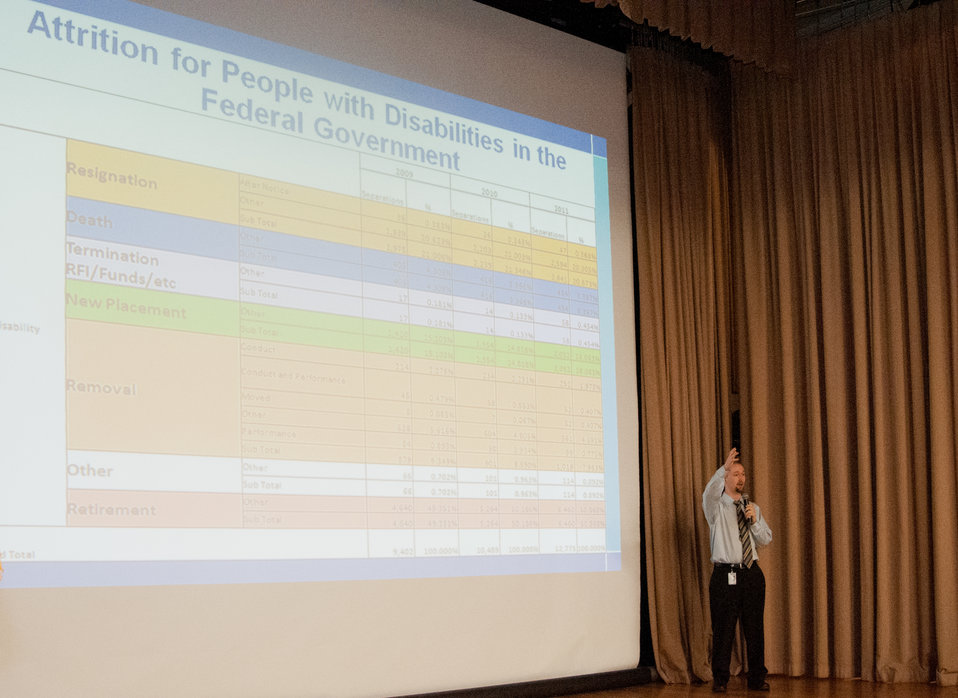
Office of Personnel Management (OPM) Diversity and Inclusion Program Manager Michael Murray discusses diversity and inclusion at the U.S. Department of Agriculture (USDA) Office of Human Resources Management (OHRM) Disability Employment Program Team Training at USDA in Washington, D.C. on Tuesday, May 14, 2013.